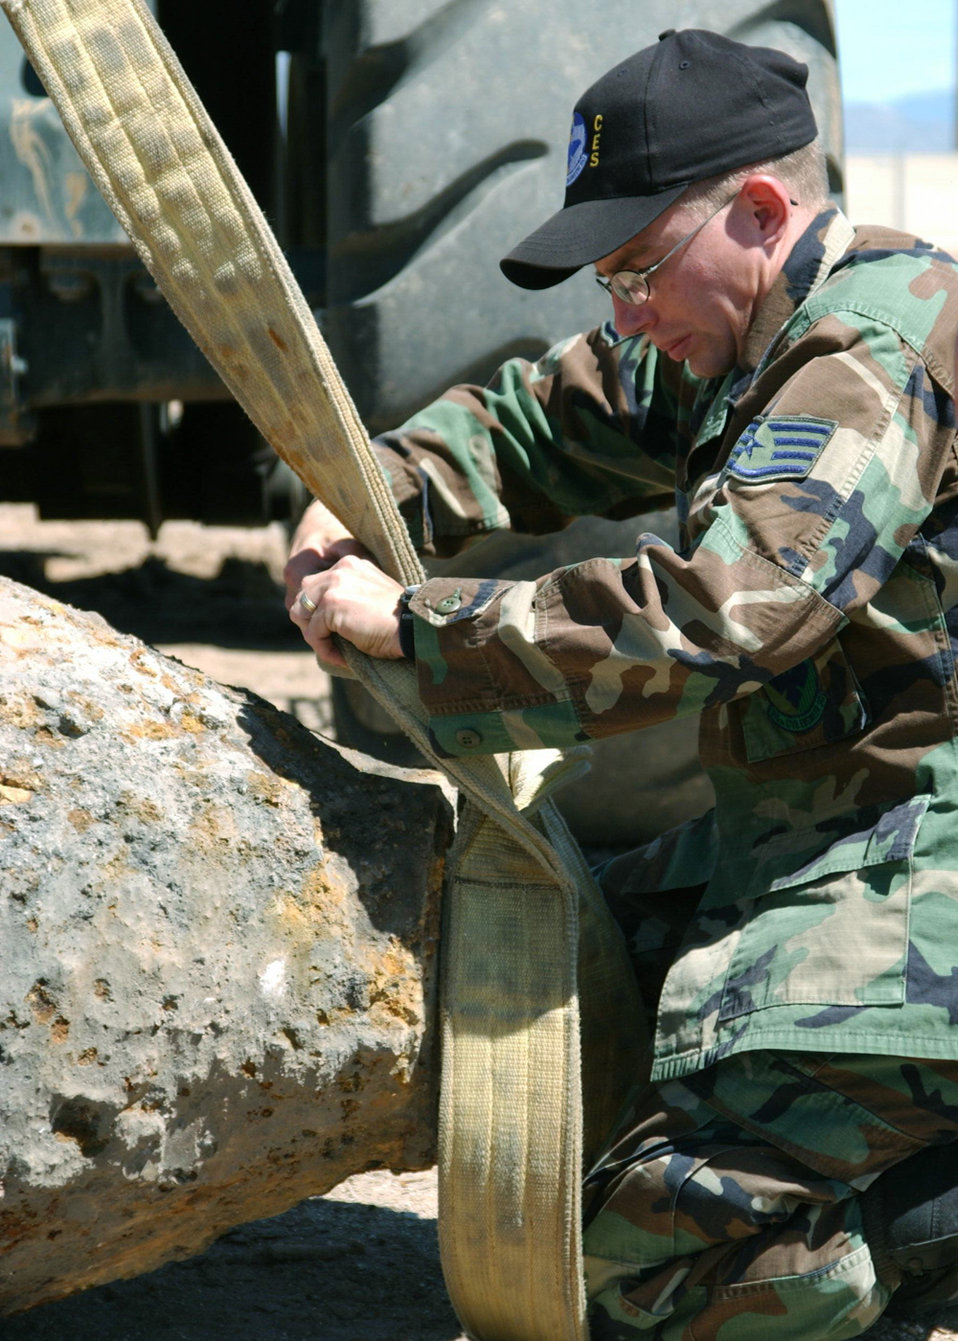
It's da bomb!

DAVIS-MONTHAN AIR FORCE BASE, Ariz. -- Staff Sgt. Dustin Prowell places a strap around a World War II bomb that was discovered at a construction site here Sept. 10. Sergeant Prowell is an explosive ordnance disposal journeyman assigned to the 355th Civil Engineer Squadron.